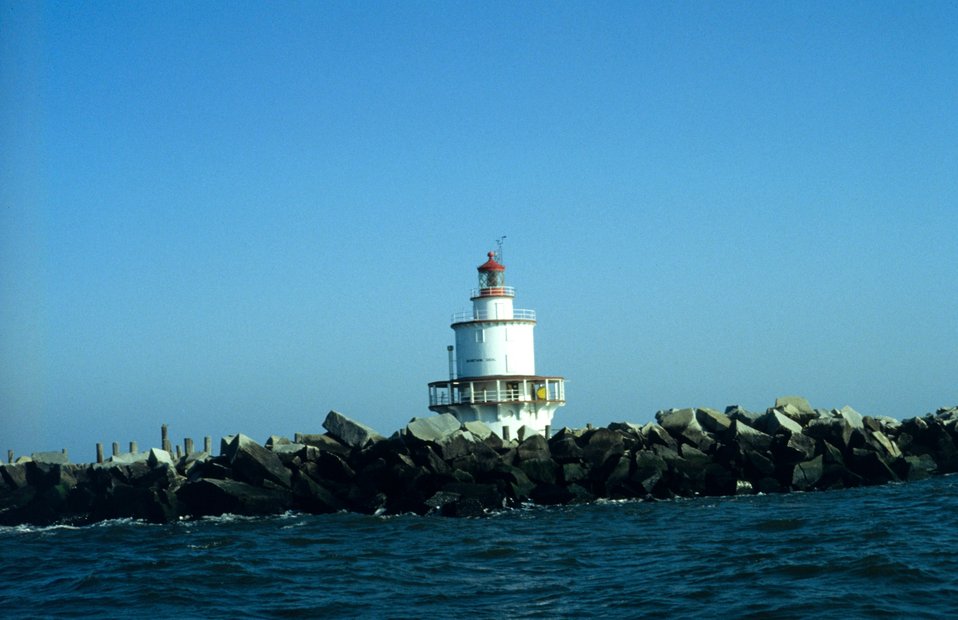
Brandywine Shoal Lighthouse seen at low tide in Delaware Bay.